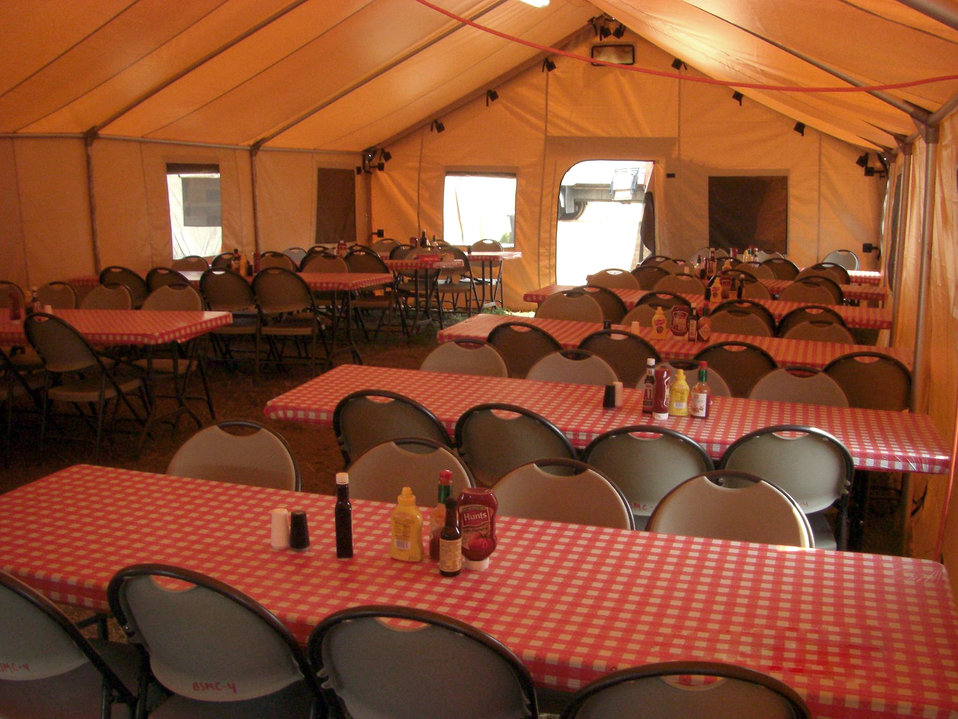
Mess hall stands ready to provide healthy meals to fire crews at the Gold Pan Fire Incident Command Post. The Gold Pan Fire in the Bitterroot National Forest near Conner, MT began by lightning on Jul. 16, 2013 by lighting have consumed approximately 39,927 acres.